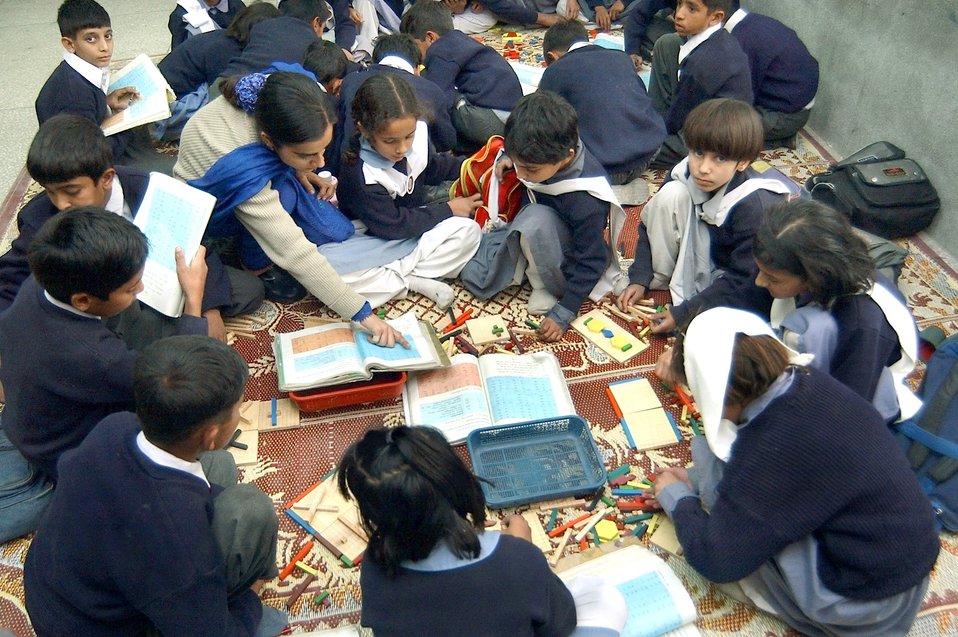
Reading 03